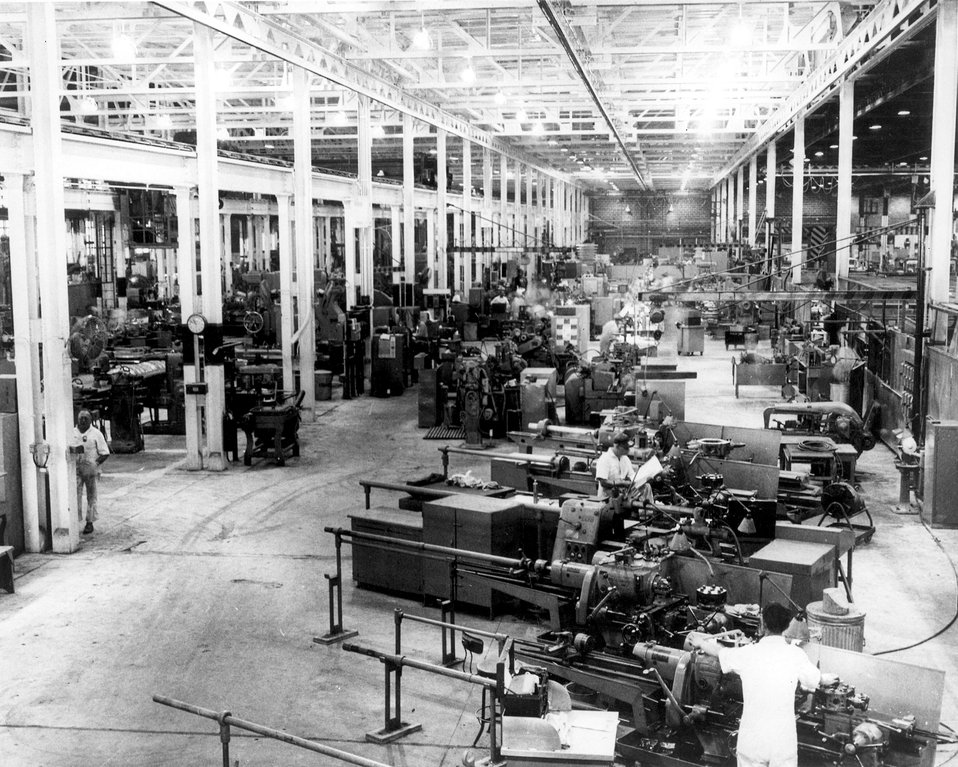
The ORGDP fabrication shops occupy over 300,000 square feet of floor space. c. 1965